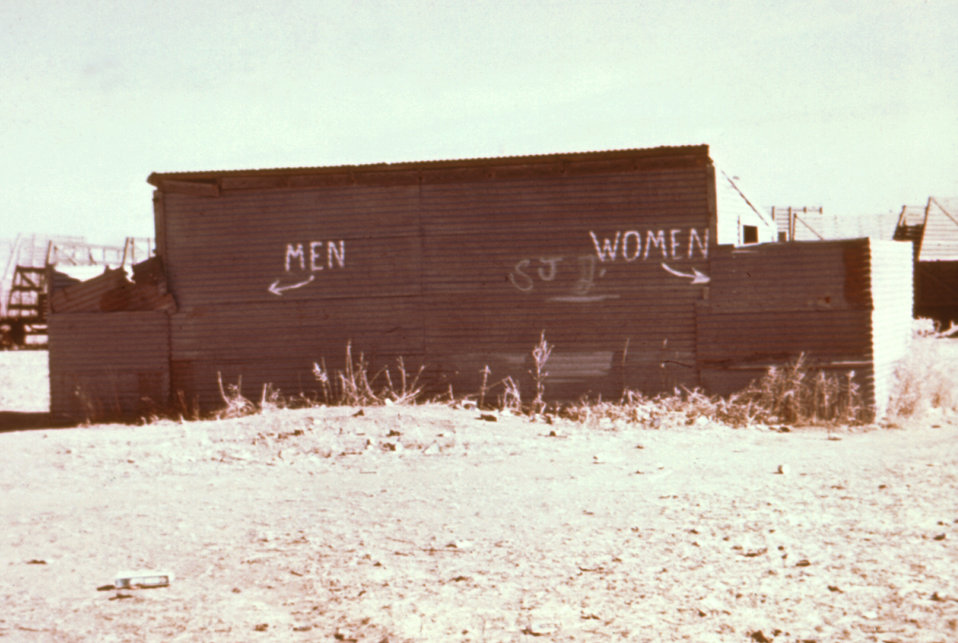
This was part of a series used to familiarize public health inspectors with sanitation conditions in migrant worker camps.